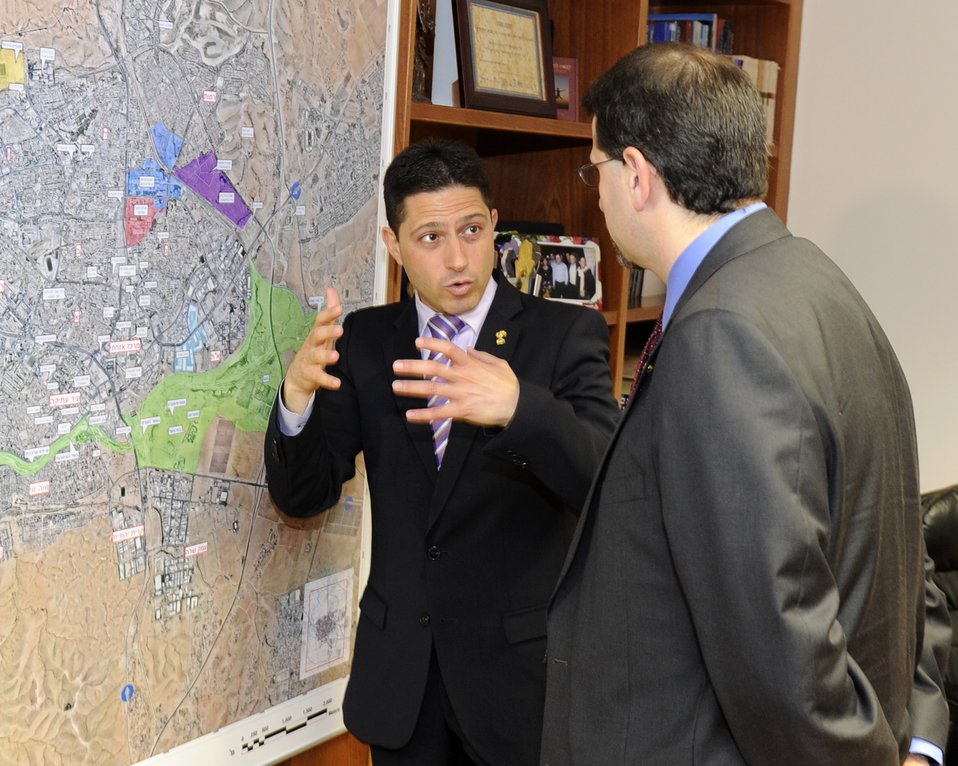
Ambassador Shapiro Visits BeerSheva

U.S. Ambassador Israel Daniel Shapiro visits BeerSheva, Israel, on March 19, 2012.